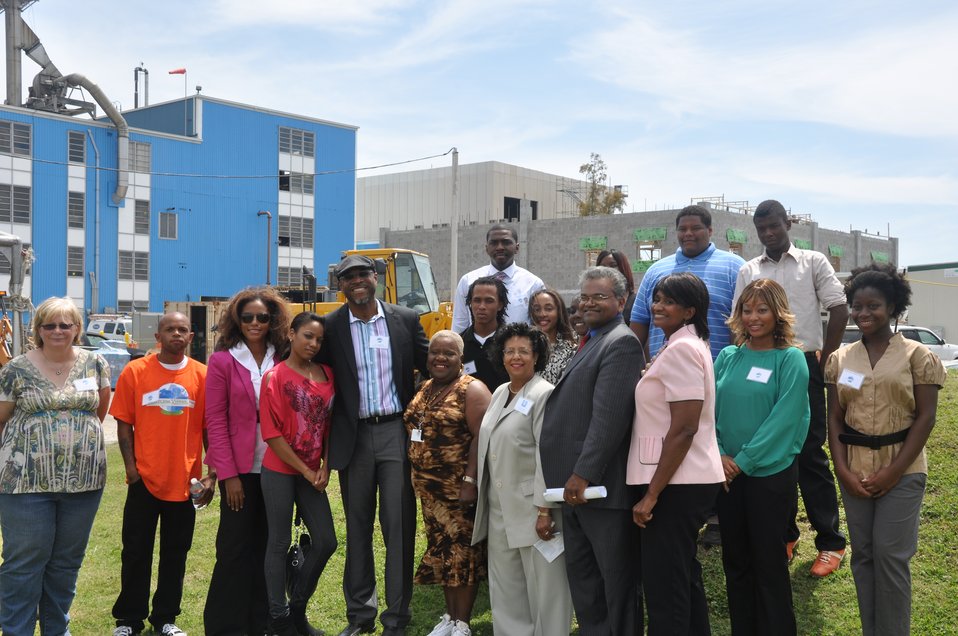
June 20, 2012 New Orleans Receives EPA Environmental Job Training Grant

Press Conference announces the recipient of the Environmental Workforce Development and Job Training grant program in New Orleans.
EPA and City of New Orleans representatives were joined by students in the Limitless Vistas’ program.

This Environmental Workforce Development and Job Training grant program will provide training funds from EPA to Limitless Vistas, Inc., Louisiana to train approximately 40 students, and place at least 32 graduates in environmental jobs.

Environmental Workforce Development and Job Training Grant Program

Press Release